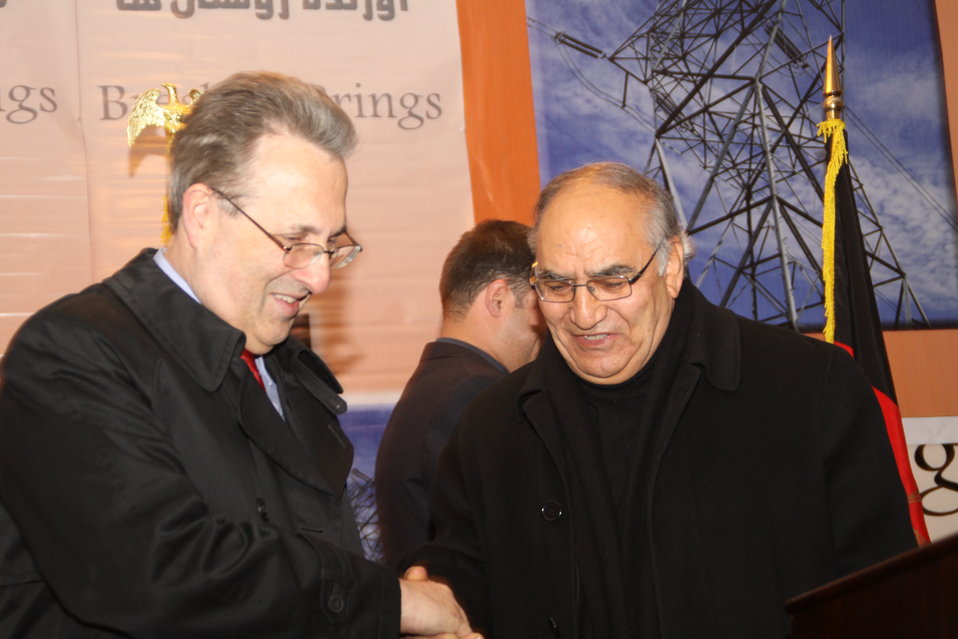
U.S. Ambassador E. Anthony Wayne and Dr. Shams